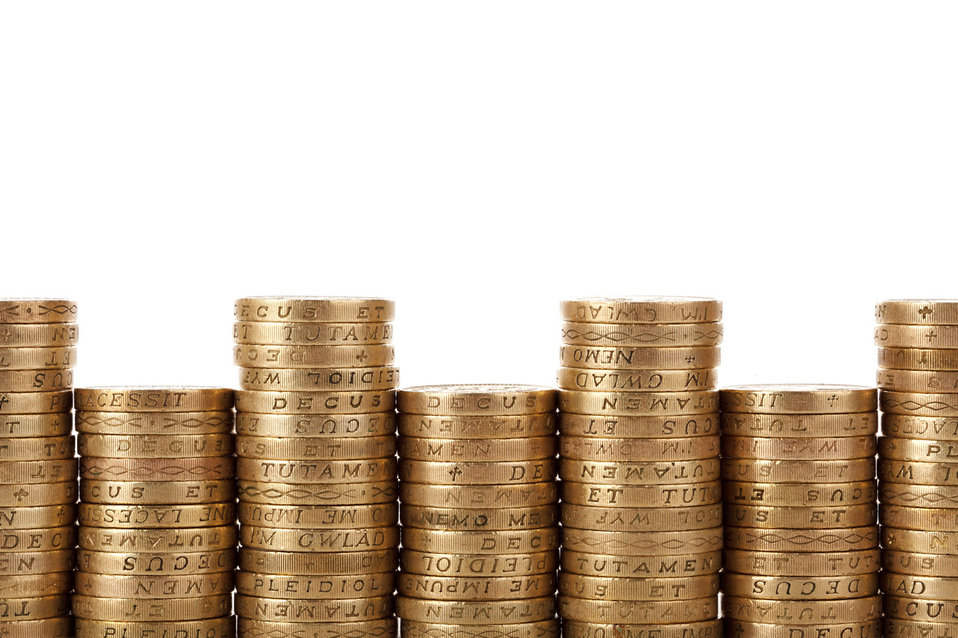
Stack of coins with pure white background.